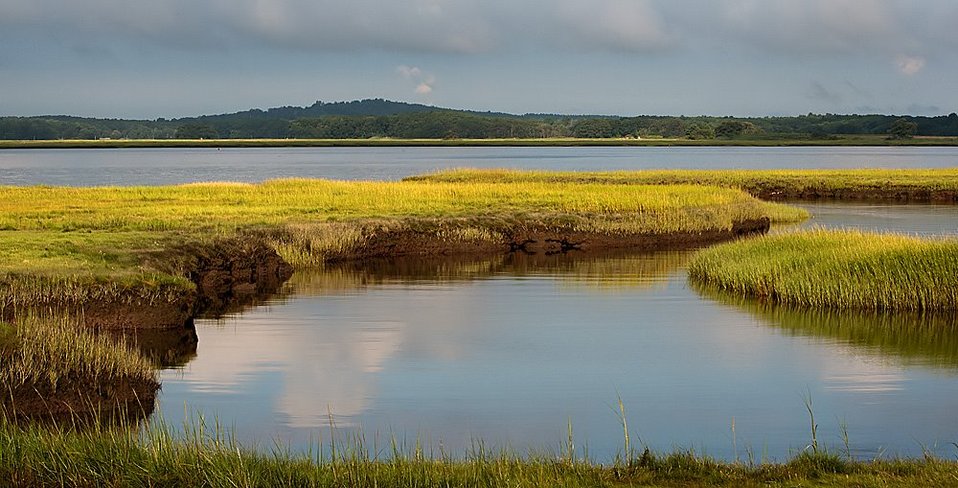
salt marsh in August

Parker River National Wildlife Refuge, MA